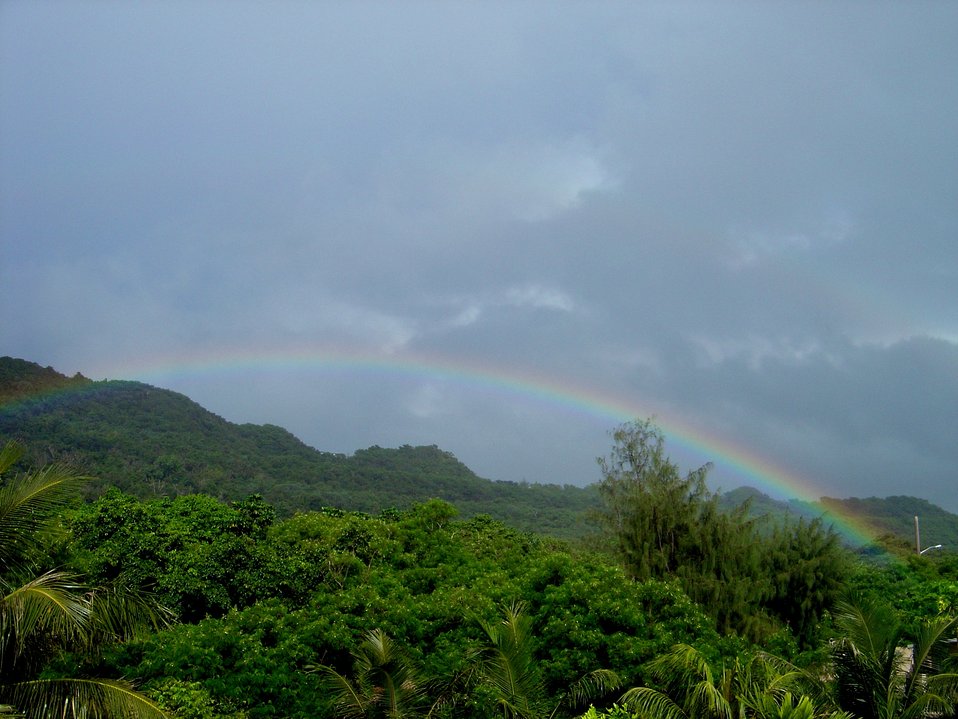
A rainbow graces the jungle foliage of the Guam mountains.